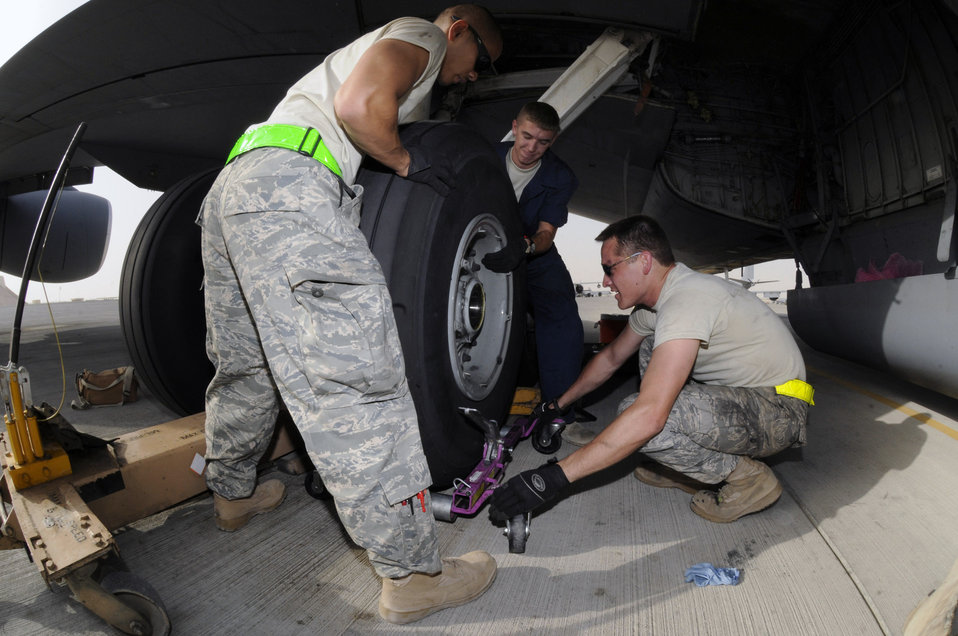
Brake it down

Airman 1st Class James Giesick and Airman 1st Class Ryan McMillen hold a tire while Tech. Sgt. Chris Reiter maneuvers the dolly for removal of a tire on a KC-135 Stratotanker Sept. 28 at an air base in Southwest Asia. The tire needed to be removed and the brake unit replaced after a crack in the heat shield was detected during a post-flight inspection. Sergeant Reiter, a native of Farmington, N.M., is deployed from Fairchild Air Force Base, Wash. Airman Giesick is from San Diego and deployed from Grand Forks AFB, N.D., and Airman McMillen, originally from Warsaw, Ill., is deployed from McConnell AFB, Kan. All are assigned to the 340th Aircraft Maintenance Unit.